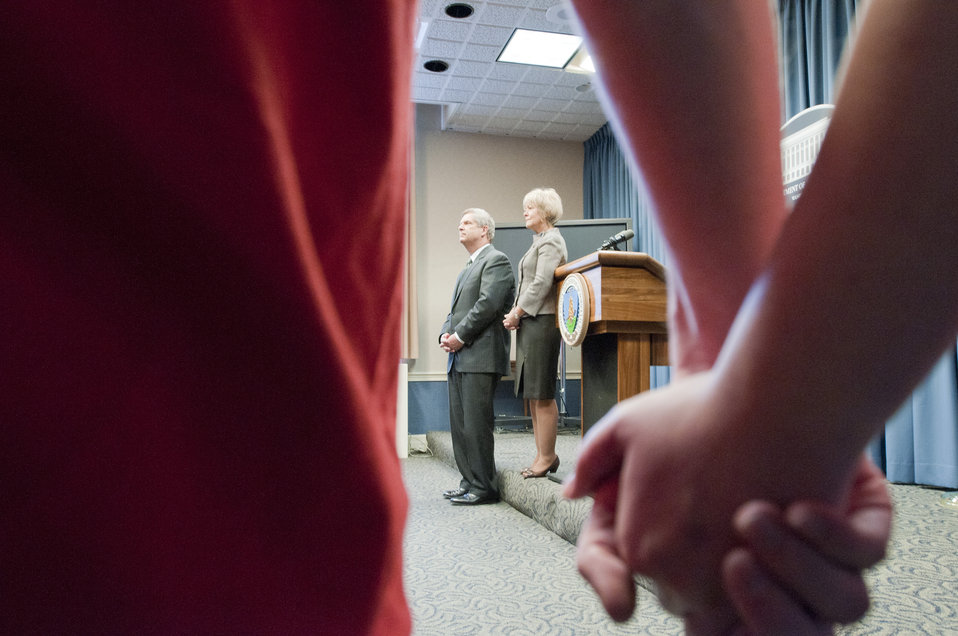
More than 90 students and educators from Mason City High School, Mason City, Iowa held hands while they sang a song for Secretary Tom Vilsack and his wife Christie on March 25, 2011 in the U.S. Department of Agriculture (USDA) headquarters in Washington, D.C. Secretary Vilsack talked about the mission of the USDA, the many places around the world that the USDA supports, as well as mentioning some noted Iowans in government and agriculture history. The Vilsacks answered several questions from the students, from “What is your day like,” to “What are the major problems USDA faces?” Following that, Director of Choral Activities Joel Everist led the group in song for the Vilsacks.